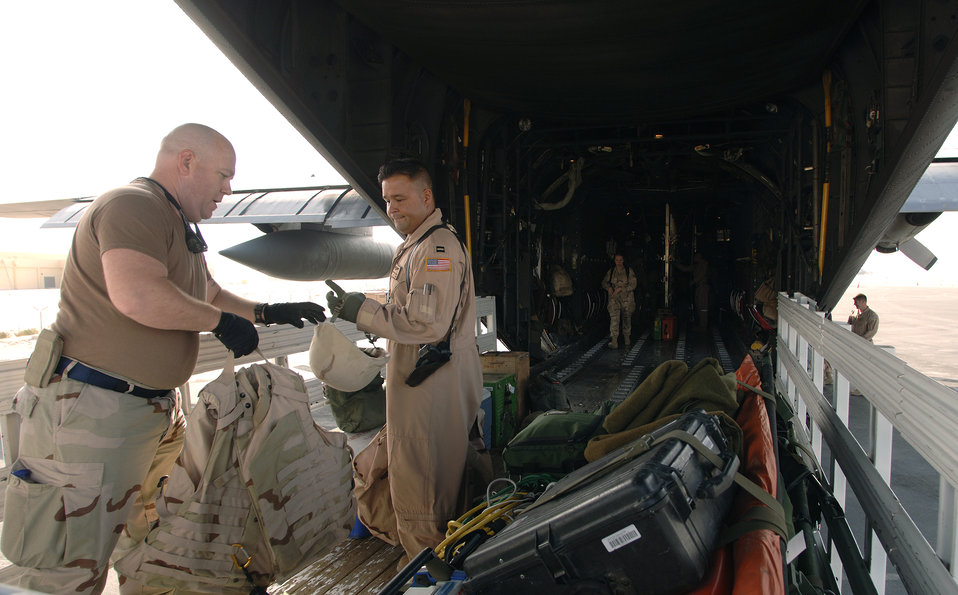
Aeromedical evacuation mission

Prior to an aeromedical evacuation mission over Southwest Asia, 379th Expeditionary Aeromedical Evacuation Squadron flight nurses and flight medics load medical equipment onto a C-130 Hercules that will serve as a